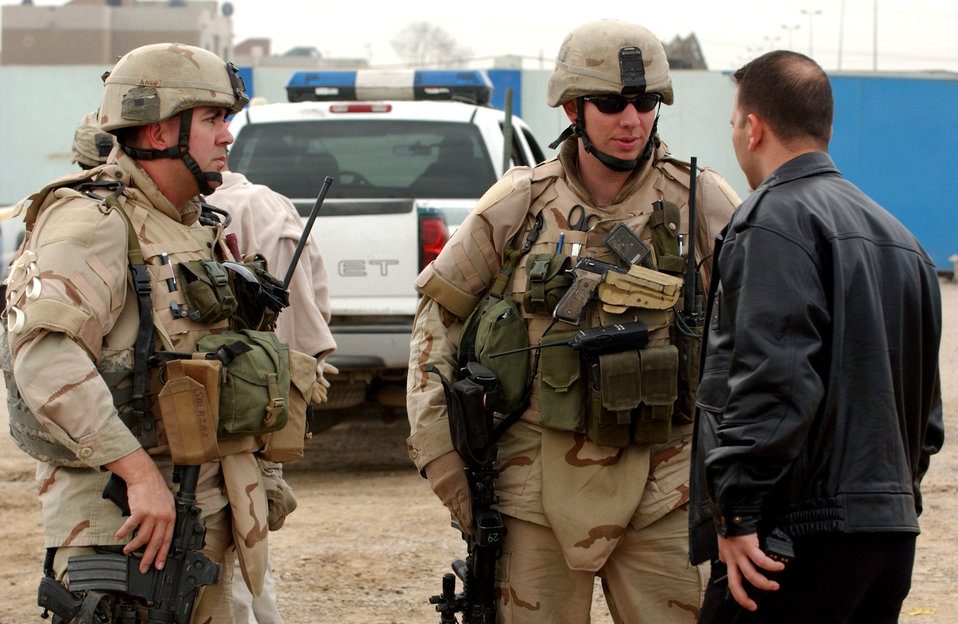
Street patrol

Staff Sgt. James Guidry, center, speaks with an Iraqi policeman Nov. 23in the Hy Al-Amil district of Baghdad, Iraq. Airmen from Detachment 7, 732nd Expeditionary Security Forces Squadron deploy into the city streets of Baghdad assisting Iraqi police in achieving self-sufficiency.